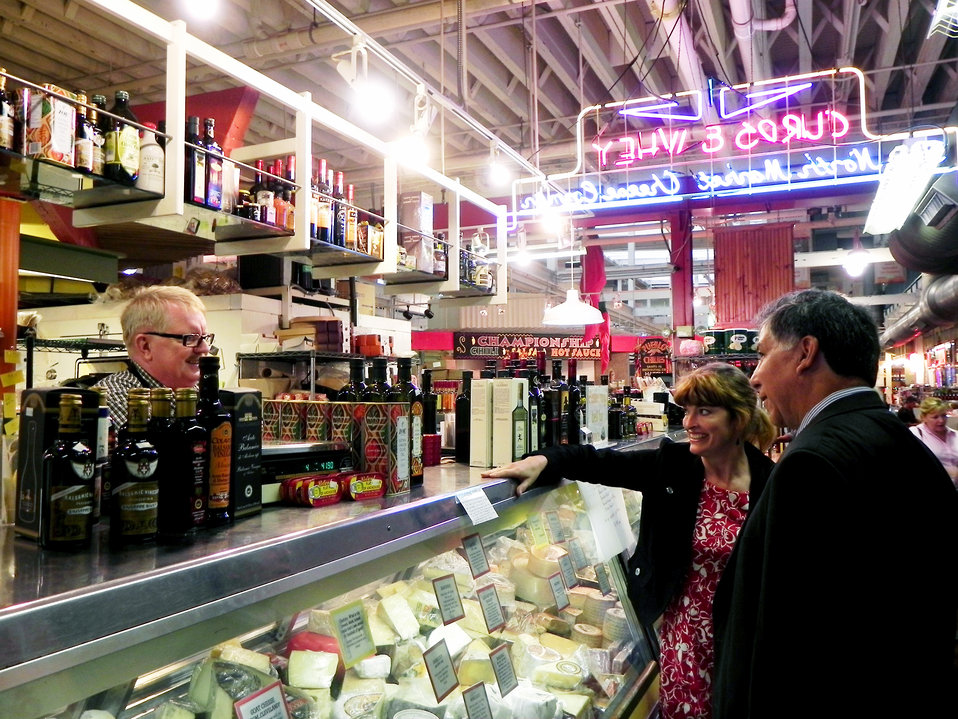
Agriculture Under Secretary for Marketing and Regulatory Programs Ed Avalos visits a cheese vendor at the Ohio State Fair in Columbus, OH on Tuesday, Aug. 2, 2011. Under Secretary Avalos attended the Ohio State Fair to host a Rural Roundtable meeting with agricultural producers and rural business leaders to explore ways federal, state and local officials can work together to improve economic conditions and create jobs. This meeting is part of a series of White House Rural Roundtables that are being held across the country this summer with senior Administration officials on behalf of the White House Rural Council.